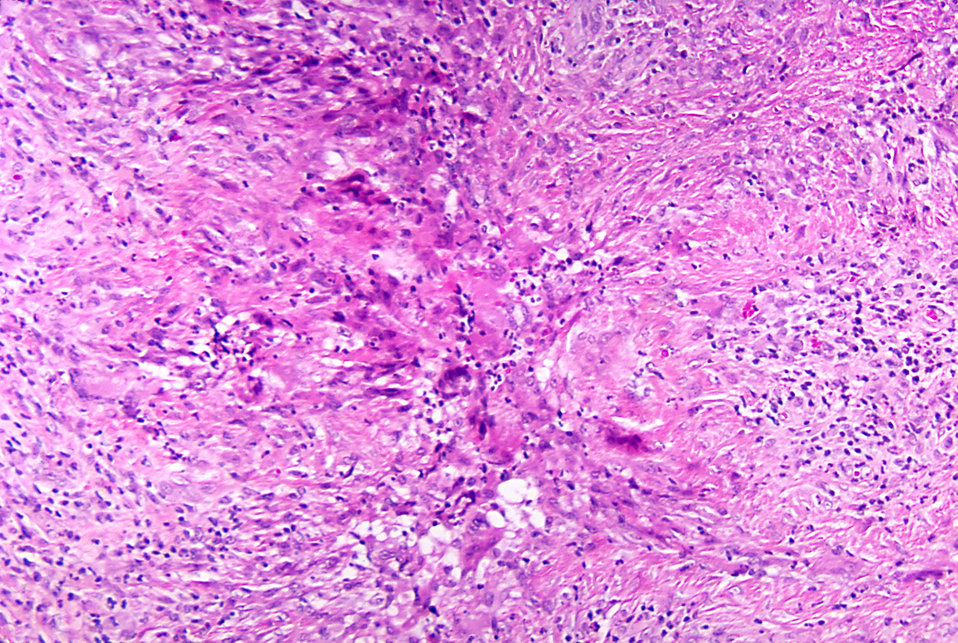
Note the histopathologic changes associated with phaeohyphomycosis due to P. parasitica using H&E stain.